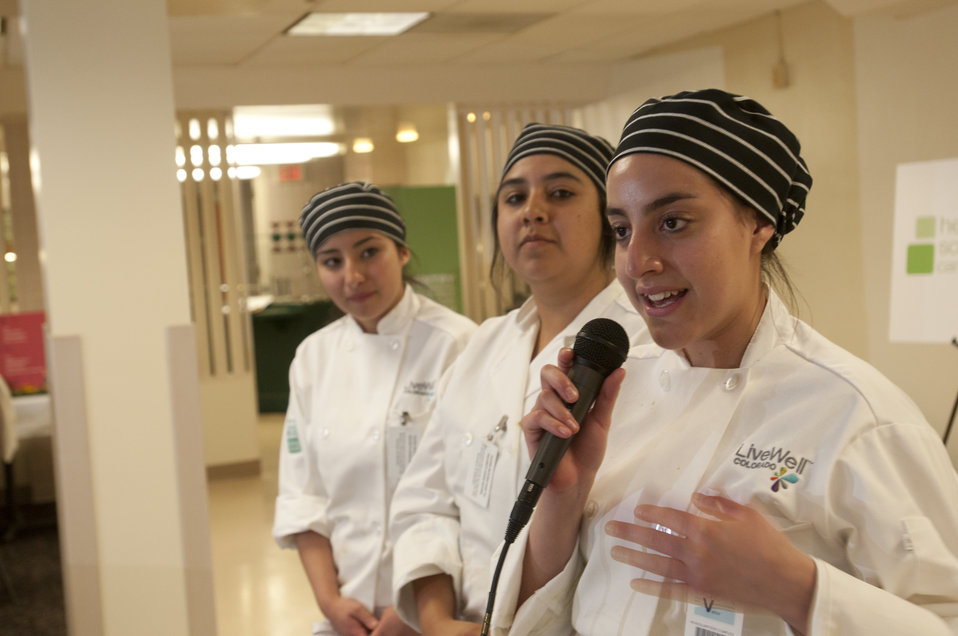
Denver's Livewell team (r-l) Brenda Alococer, Edna Rodriguez and Suzi Hernandez take turns during the team's presentation and question and answer session, during the Cooking Up Change, National Healthy Cooking Competition at the USDA in Washington, DC, on Monday, May 23, 2011.